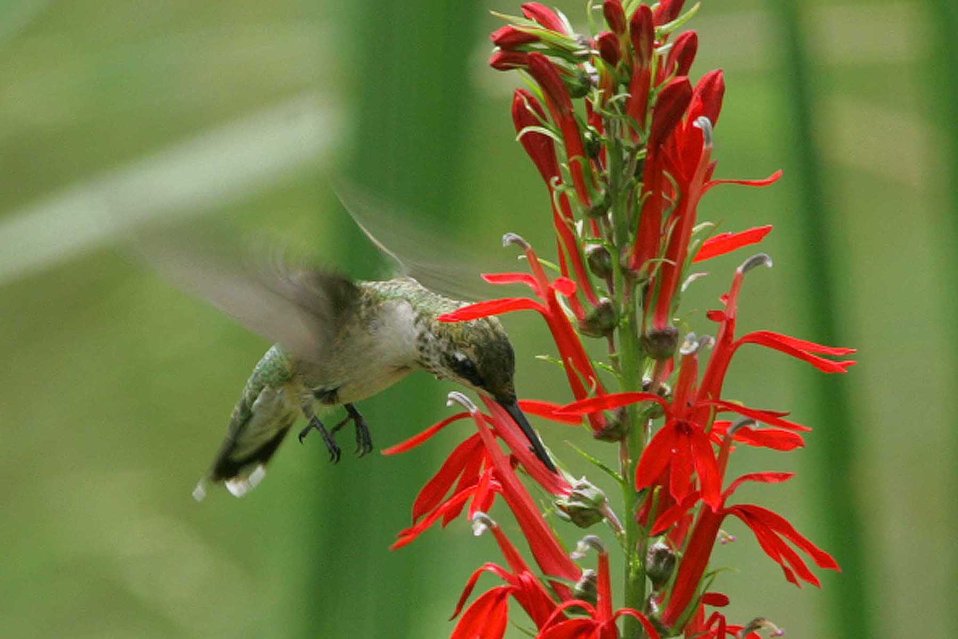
Ruby-throated Hummingbird at Cardinal Flower

Ruby-throated hummingbird at a cardinal flower at John Heinz National Wildlife Refuge in Philadelphia, Pennsylvania.